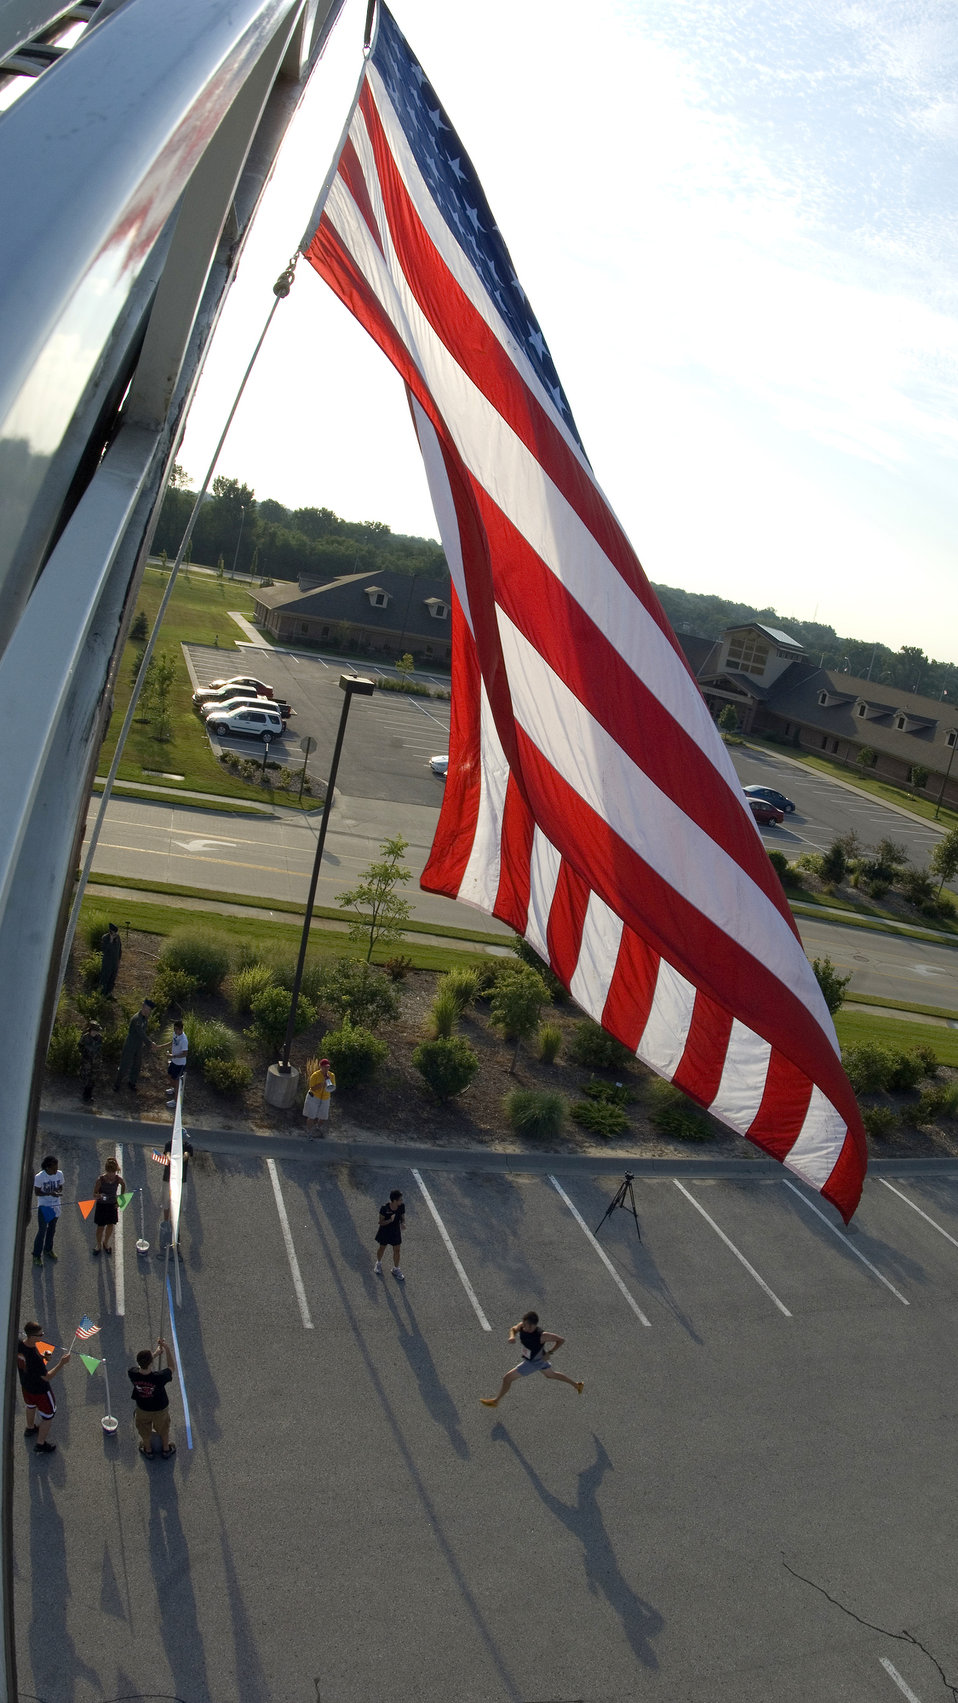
Runners get fit to fight during Air Force Week in the Heartland

Runners make their way across the finish line after competing in the seven-mile Bellevue/Offutt Runway Run Aug. 10 during Air Force Week in the Heartland supported by Offutt Air Force Base, Neb. The week is designed to broaden awareness of the Air Force's role in the war on terrorism and strengthen support for Airmen serving worldwide in defense of freedom.